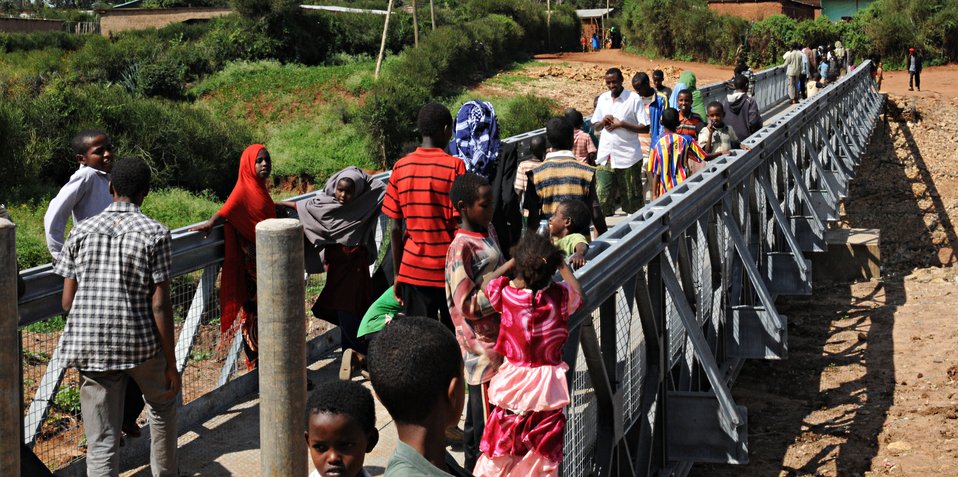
144 hours in Ethiopia: The Negele Borena Bridge

Residents of Negele Borena, Ethiopia, line up to cross the recently dedicated town bridge Dec. 6, 2011. The bridge was built as a means for pedestrians and livestock to cross a dangerous river.